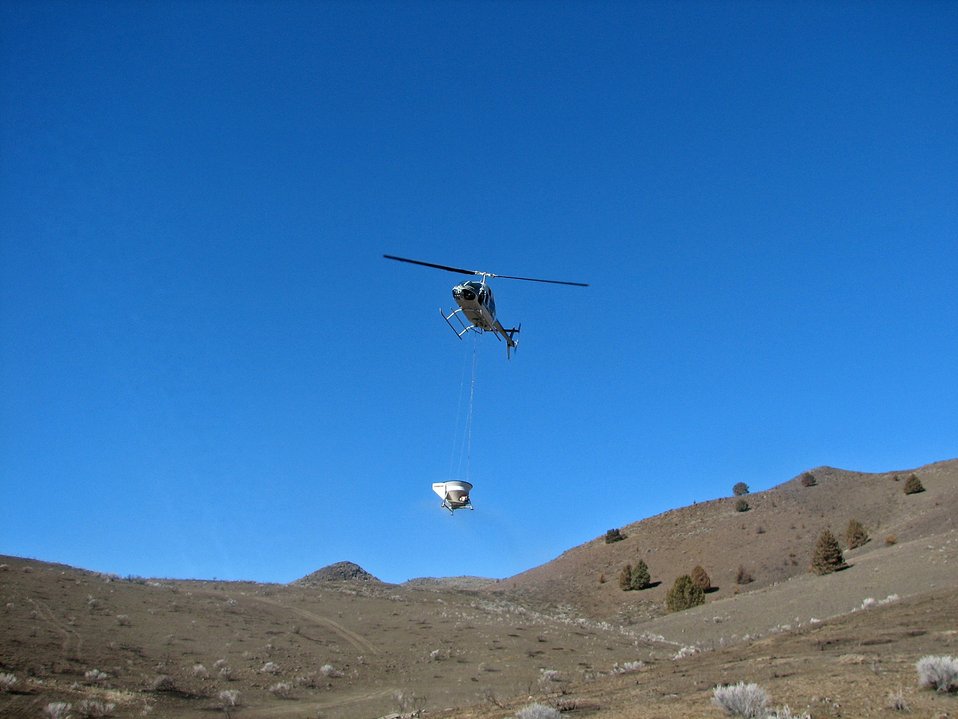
Approximately 400 acres of the Klamath Hills wildfire south of Klamath Falls were reseeded with native grasses, forbs, and shrubs.